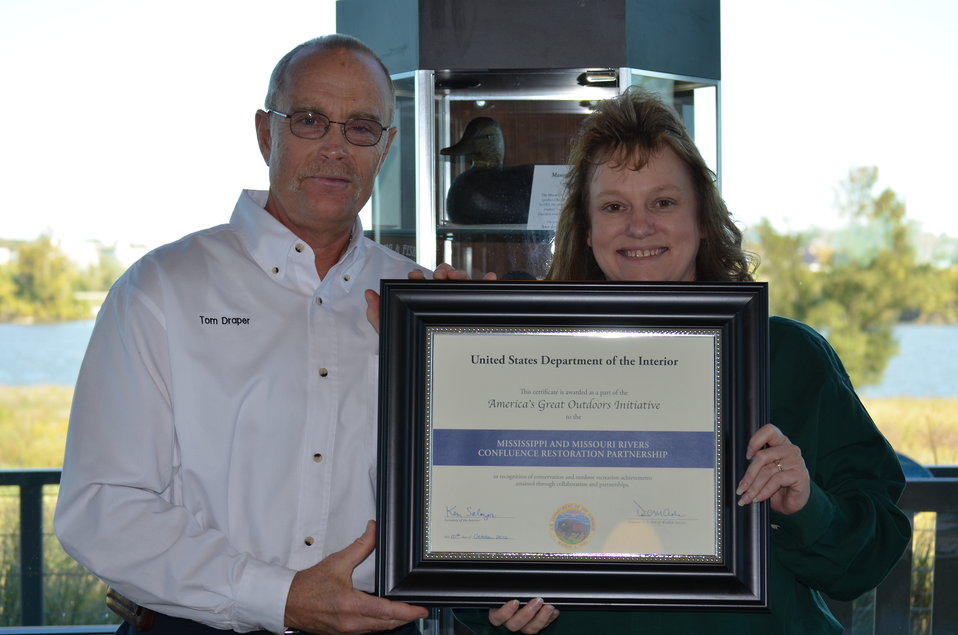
MO Dept. of Conservation honored

Tom Draper, Deputy Director of Missouri Department of Conservation presented with award on behalf of Department of Interior. The Missouri Department of Conservation has been a key partner in the restoration, enhancement and protection of approximately 20,000 acres in the confluence. USFWS/Ashley Spratt